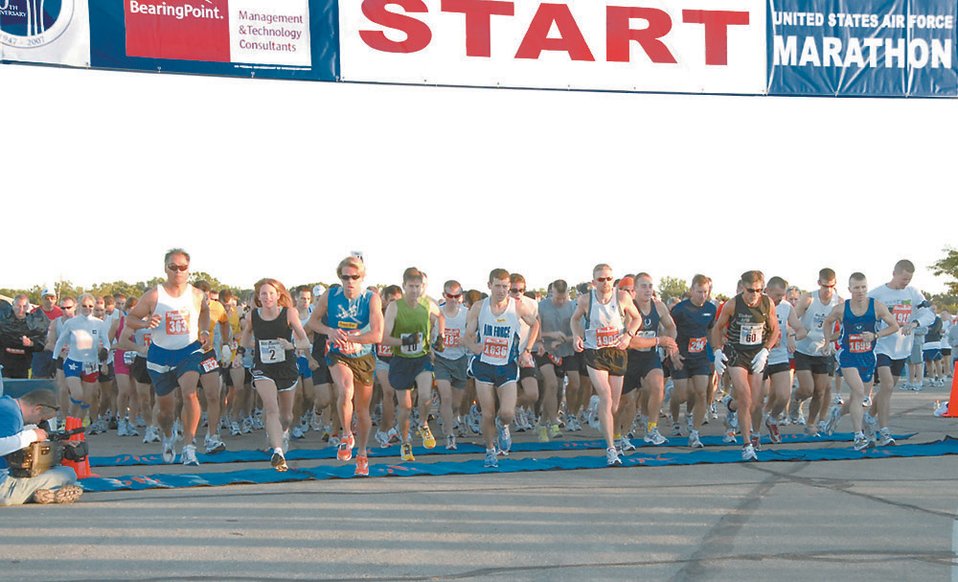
U.S. Air Force Marathon

The 2007 United States Air Force Marathoner runners take off from starting line. The annual marathon is held at Wright-Patterson Air Force Base in Dayton, Ohio. The 2008 marathon will take place Sept. 20.